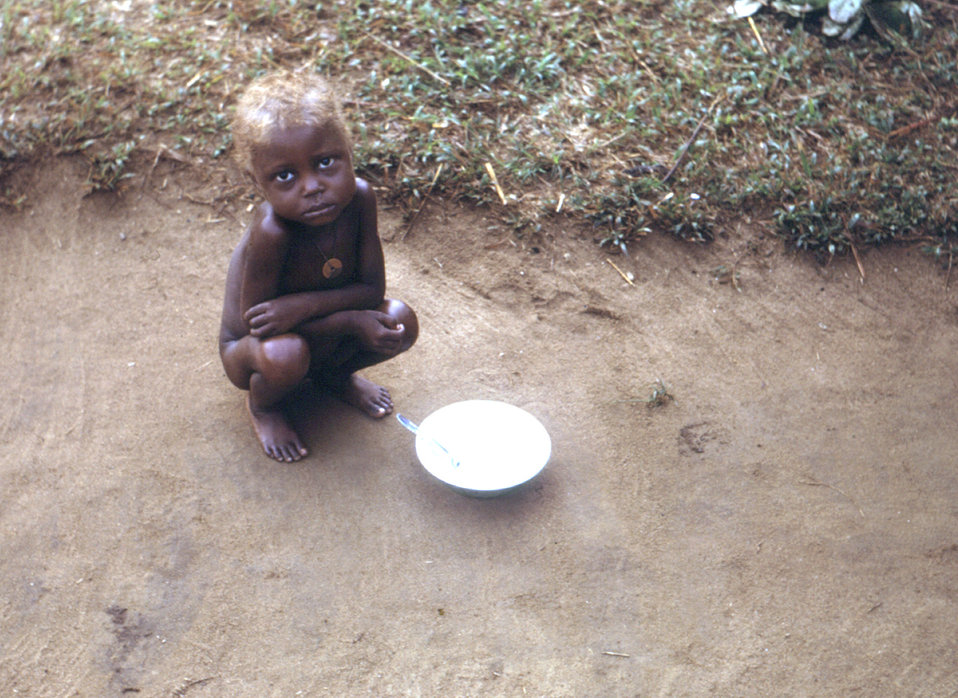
This late 1960s photograph shows a child after finishing a meal provided by a CDC relief operation during the Nigerian-Biafran war. The child was subsequently treated for symptoms indicative of stage-four kwashiorkor.